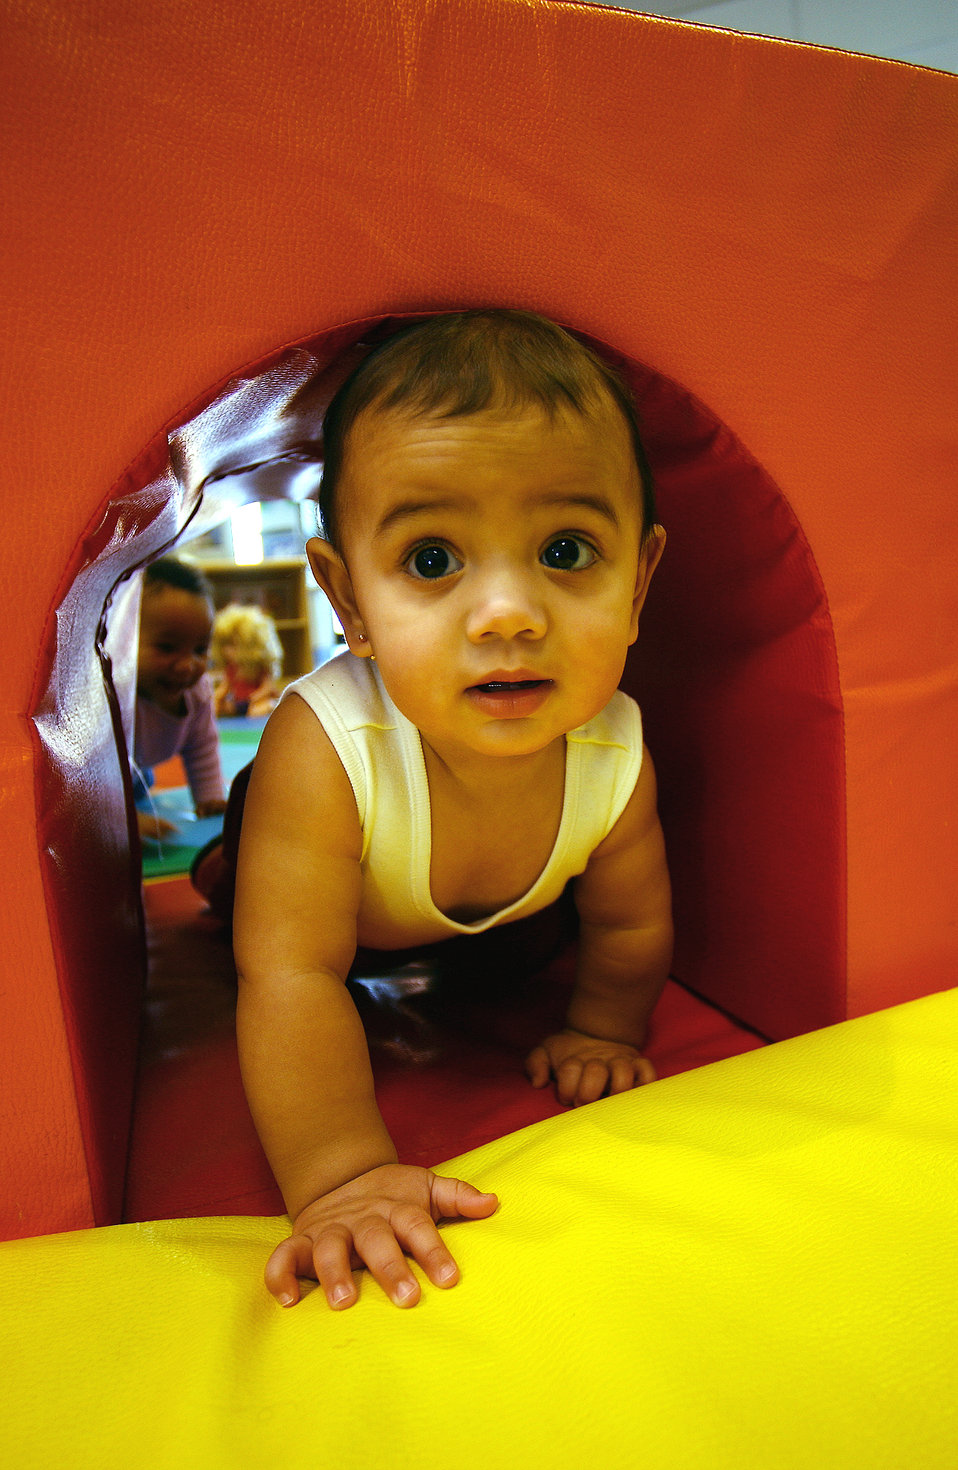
Peek-a-boo

ROYAL AIR FORCE LAKENHEATH, England -- Mia Onders crawls through a toy house tunnel at the child development center here March 25. April is dedicated as